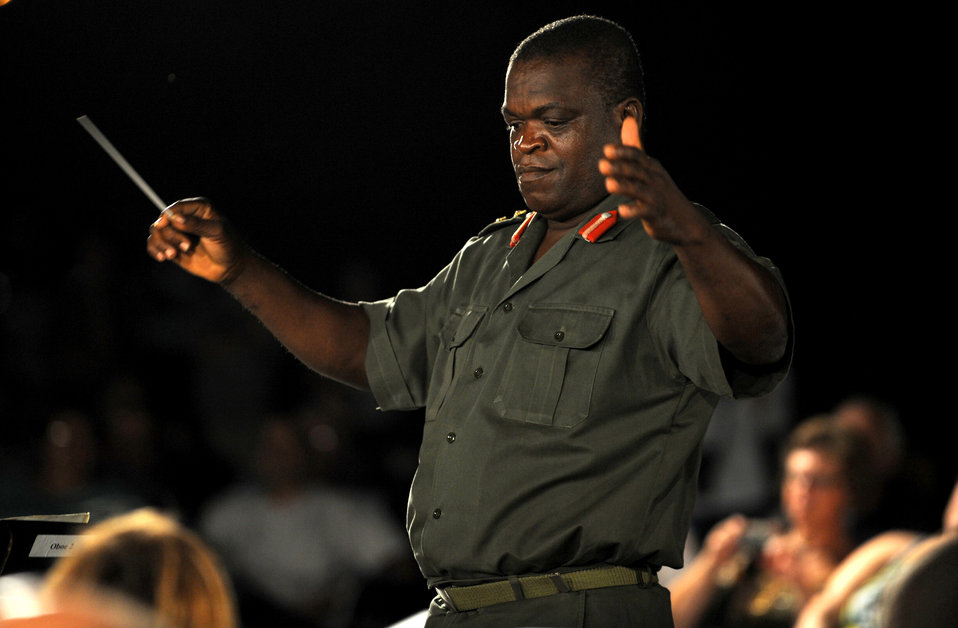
Air Force Band

Col. Sampson Paa-Kwesi Ebonyi, director of music and bands of Ghana armed forces, conducts the U.S. Air Force band as they played for bystanders at the Air Force Memorial on August 24, 2012 in Washington D.C. The USAF Band hosts this concert every Tuesday from June 5-August 28.